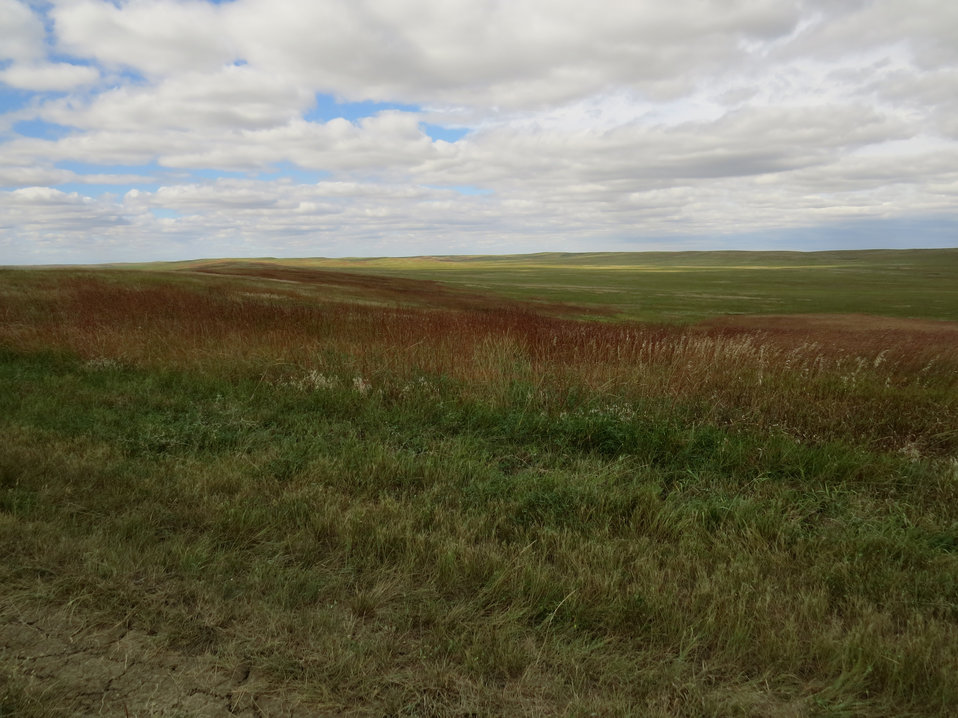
P

The Fort Pierre National Grassland in South Dakota teems with rich biodiversity and is home to the new spider species, Theridion pierre. Fort Pierre National Grasslands is a mixed-grass prairie that usually receives the most rainfall per year of any grassland, which can be as much 18 inches.